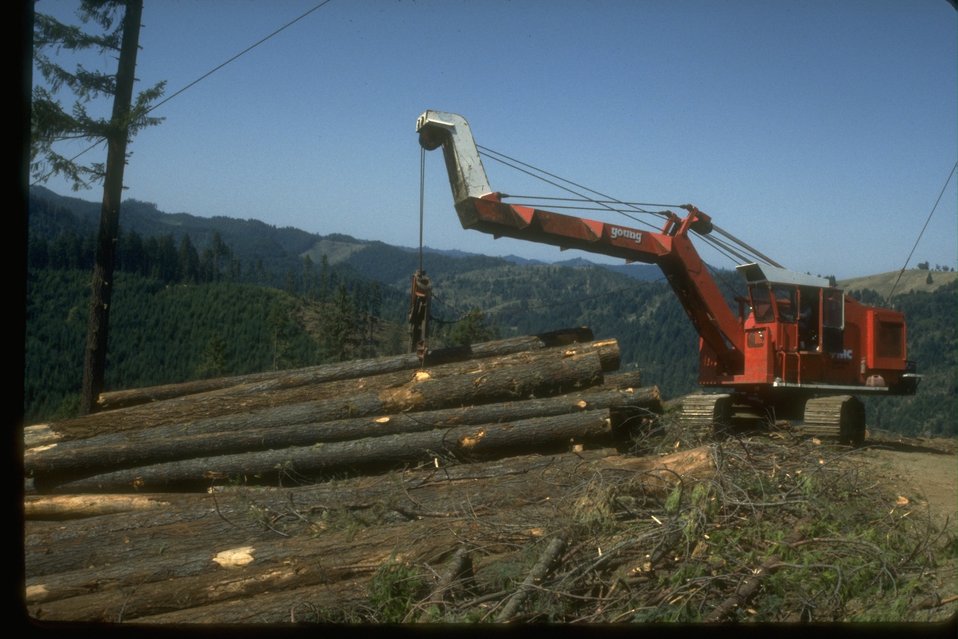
Large crane yarding logs.